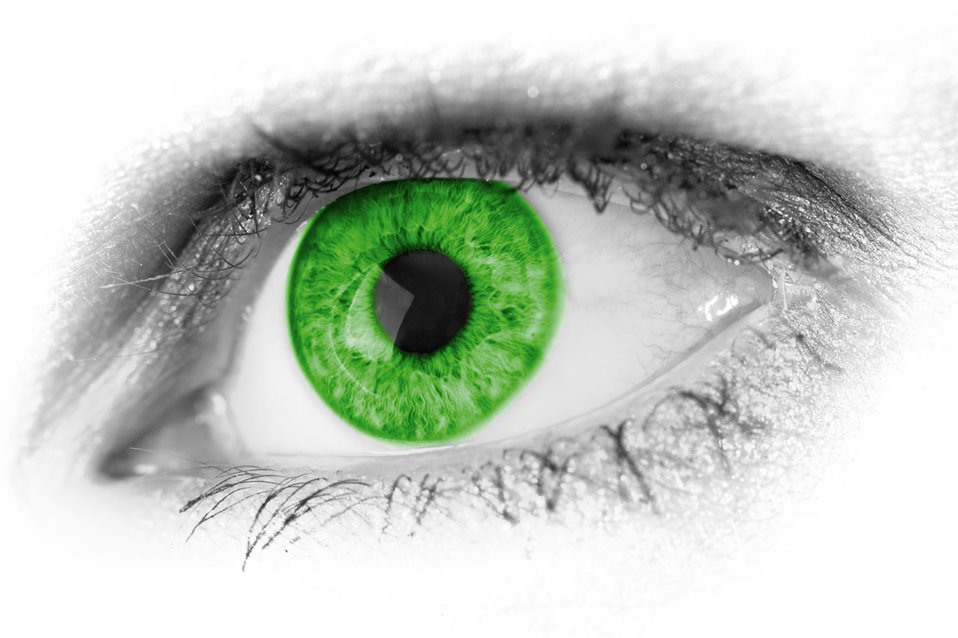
Green eye detail

Macro photo in black and white with a green eye.